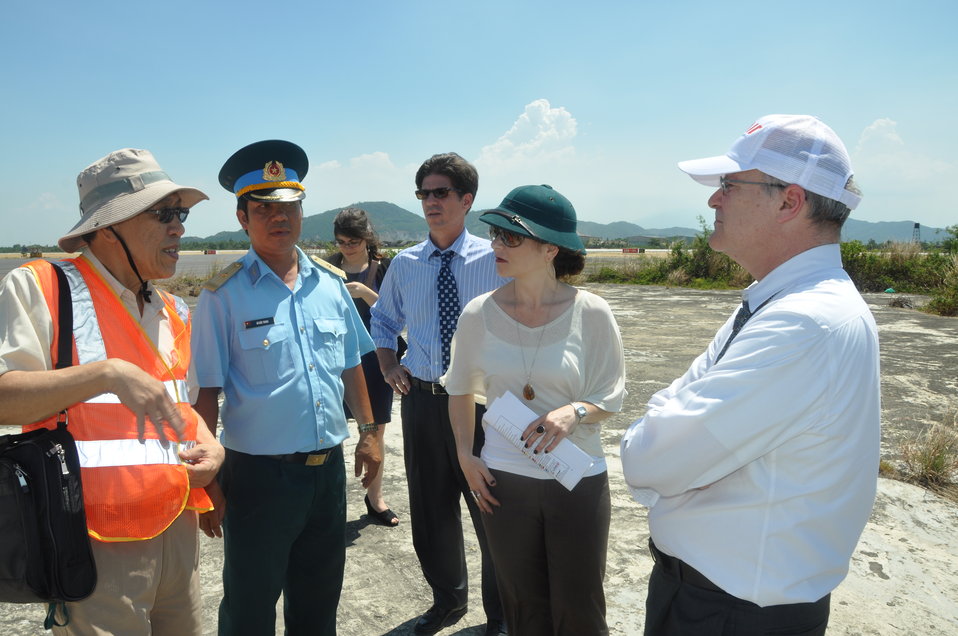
USAID Deputy Administrator Donald Steinberg and delegation visit Danang Airport

USAID Deputy Administrator Donald Steinberg Visits Vietnam